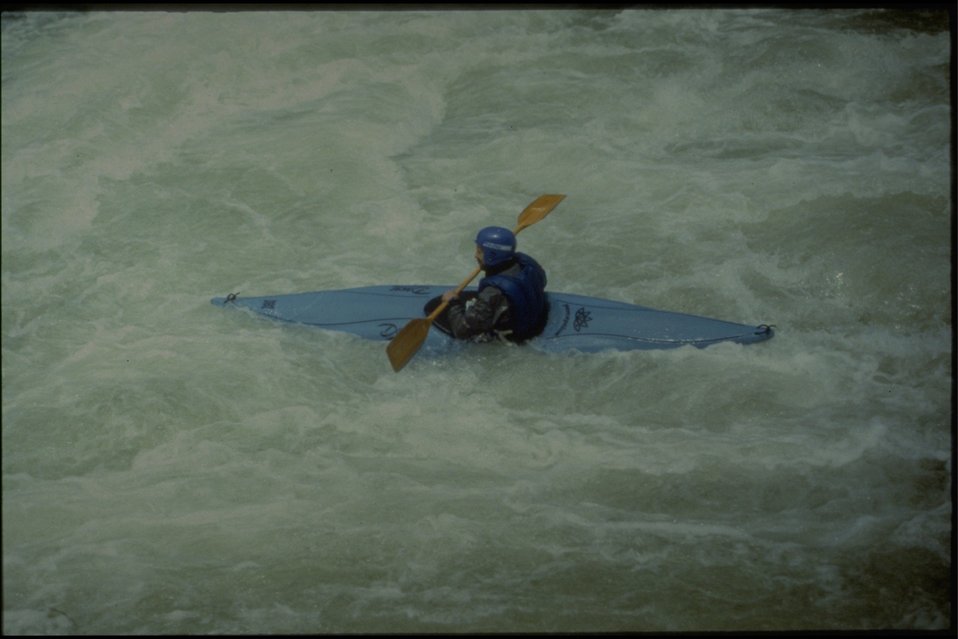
Rogue River - Rainie Falls, wild section. Kayaker in at the bottom of main falls.